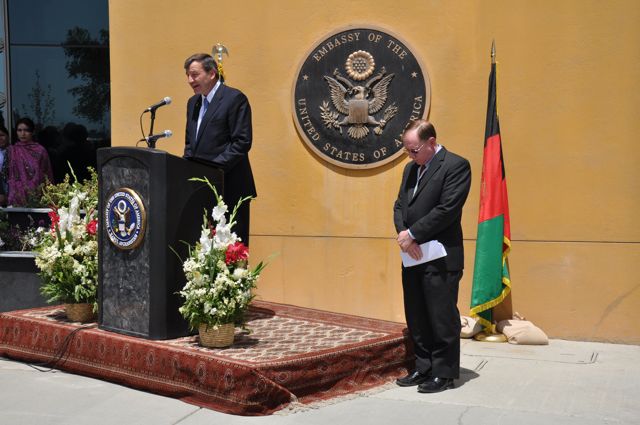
Memorial Day at US Embassy in Kabul

Ambassador Eikenberry and Ambassador Keith